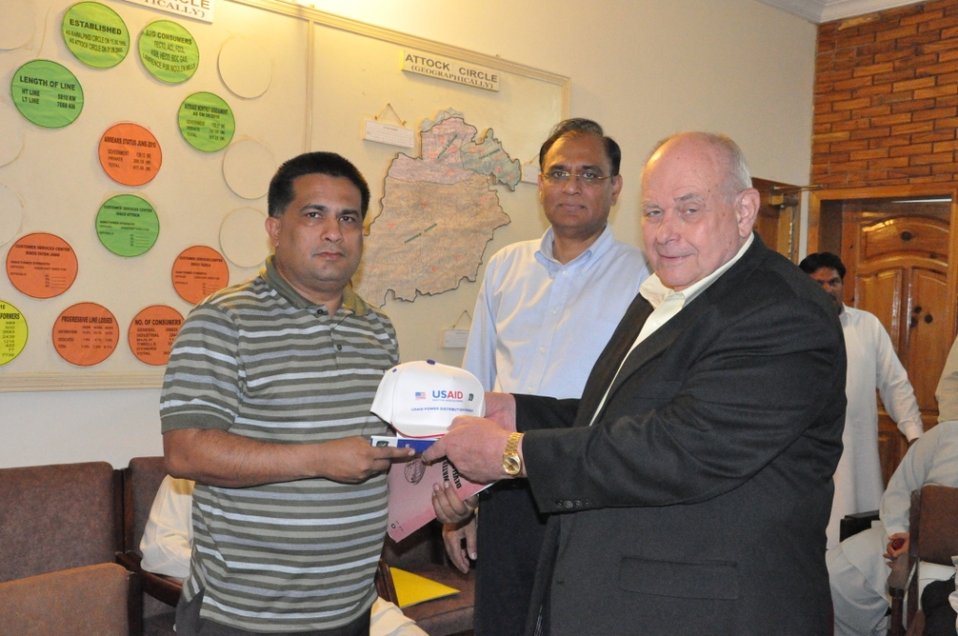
Usaid To Provide Technical Assistance To Improve Efficiency Of Tube-Wells In Iesco By Installing 2600 Lt Capacitors at Islamabad on April 26, 2012